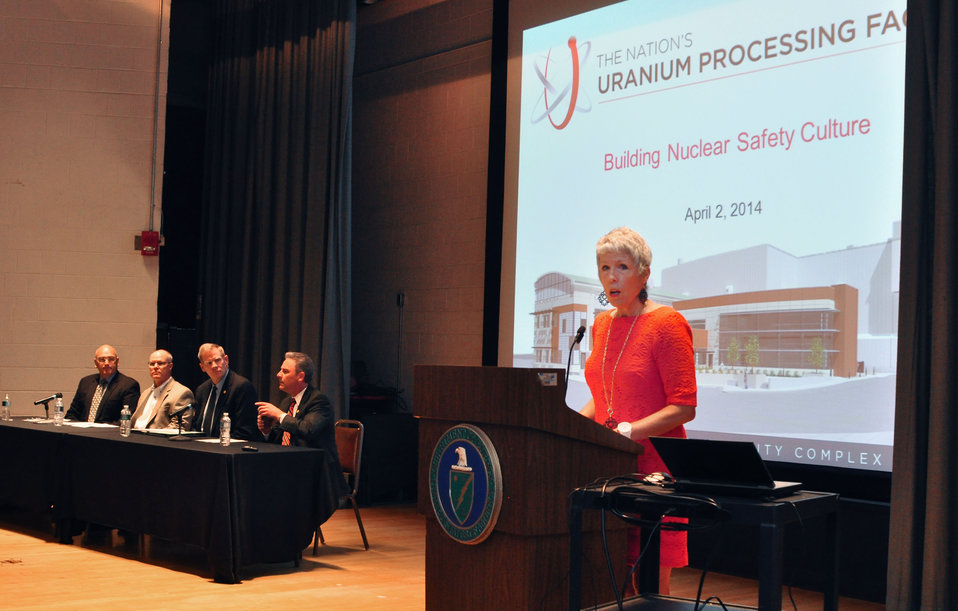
Oak Ridge Business Safety Partnership UPF 2014 Oak Ridge

14-042 DOE photo Lynn Freeny 4-2-2014 Oak Ridge Tennessee